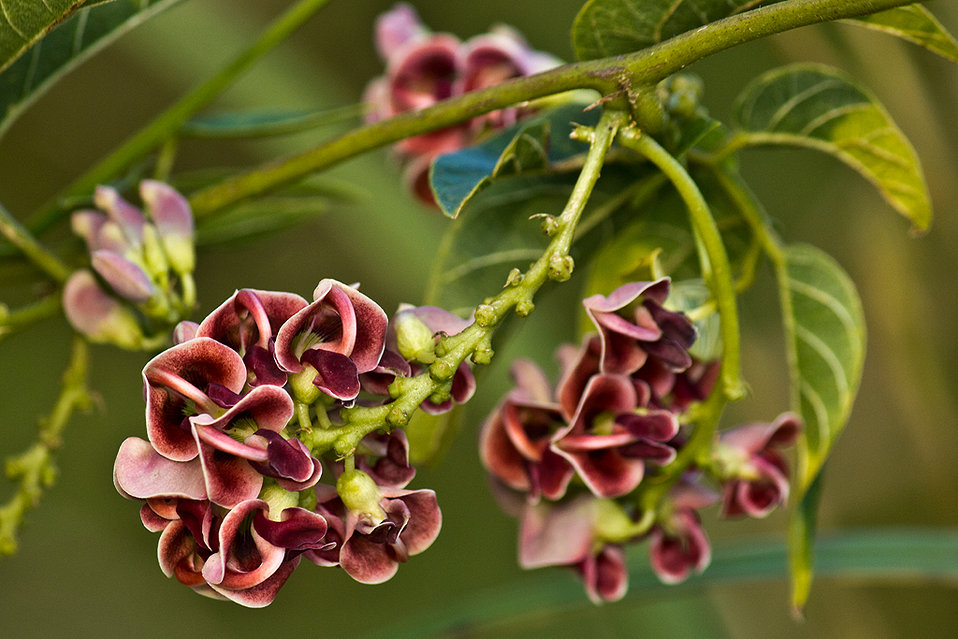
Flowers at Rachel Carson National Wildife Refuge

Credit: Steve Norris/USFWS Volunteer

www.fws.gov/refuge/rachel carson/